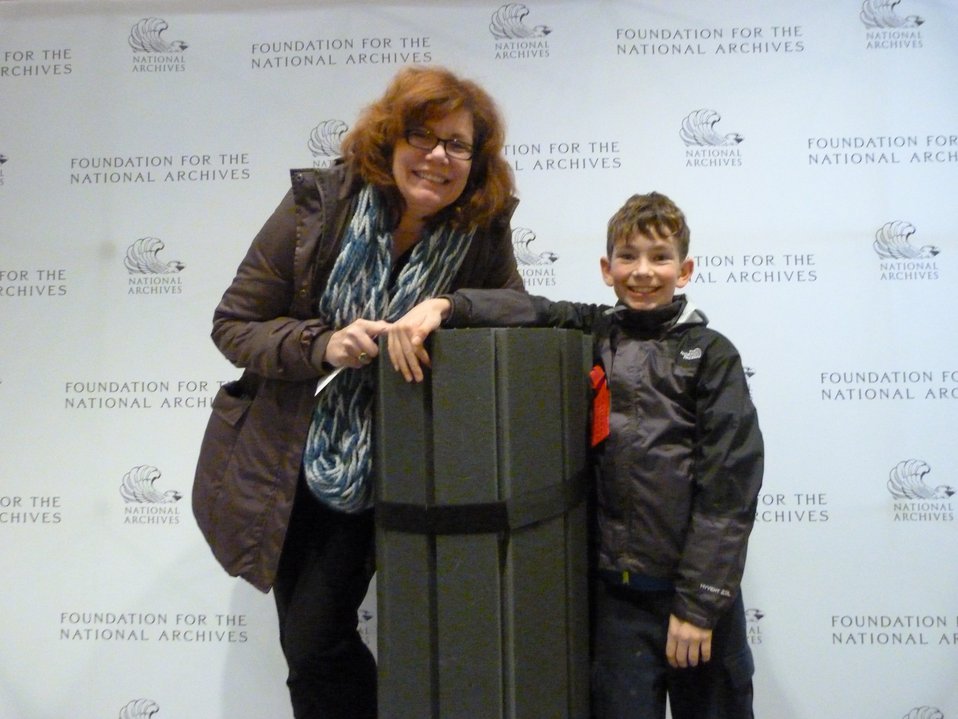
Rotunda Sleepover

Rotunda Sleepoverr; Photo provided by The Foundation for the National Archives